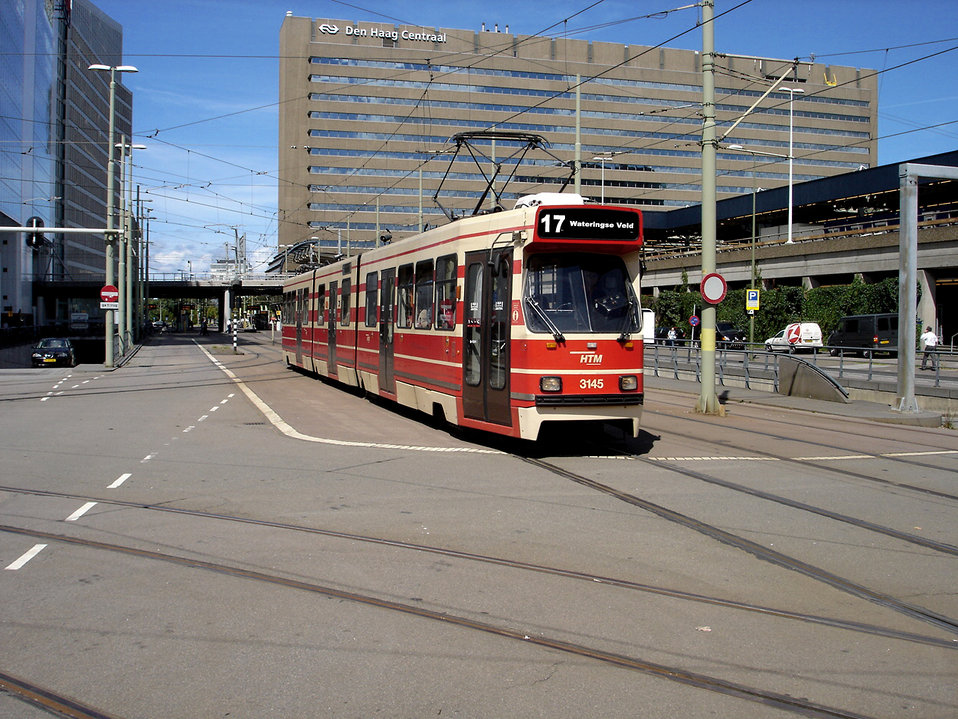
Nederlands: Rijnstraat Den Haag, GTL tram 17